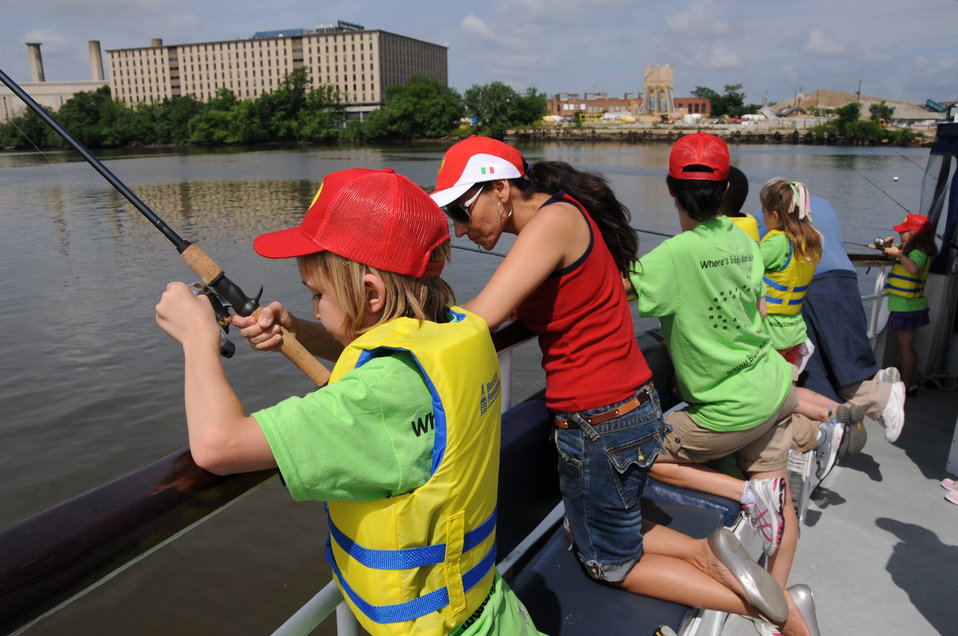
2013 National Fishing and Boating Week

Local students prepare to enjoy fishing at the annual kick-off of National Fishing and Boating Week on the Anacostia River in Washington D.C.